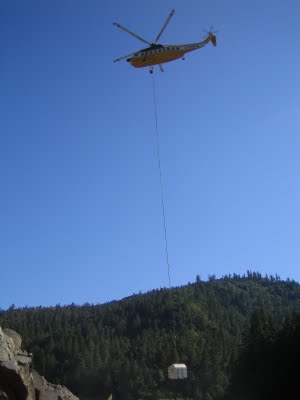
Helicopter carrying out dumpster full of illegally dumped trash

A Sikorsky S-61 helicopter brings in empty dumpsters and carries them out full of illegally dumped trash that threatened salmon habitat and would have been carried into the Klamath River during major floods.